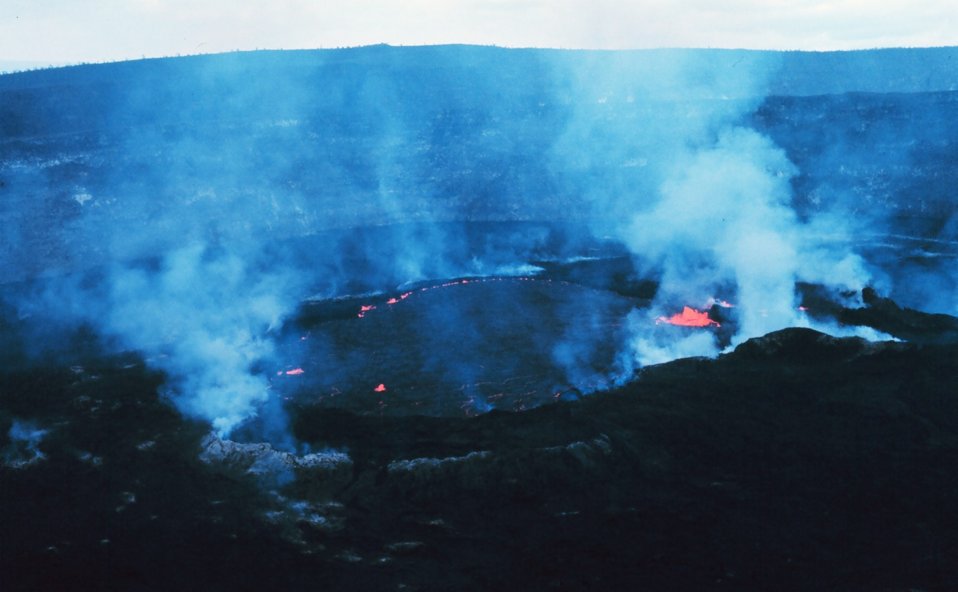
Halemaumau Fire Pit within Kilauea Crater at Volcanoes National Park